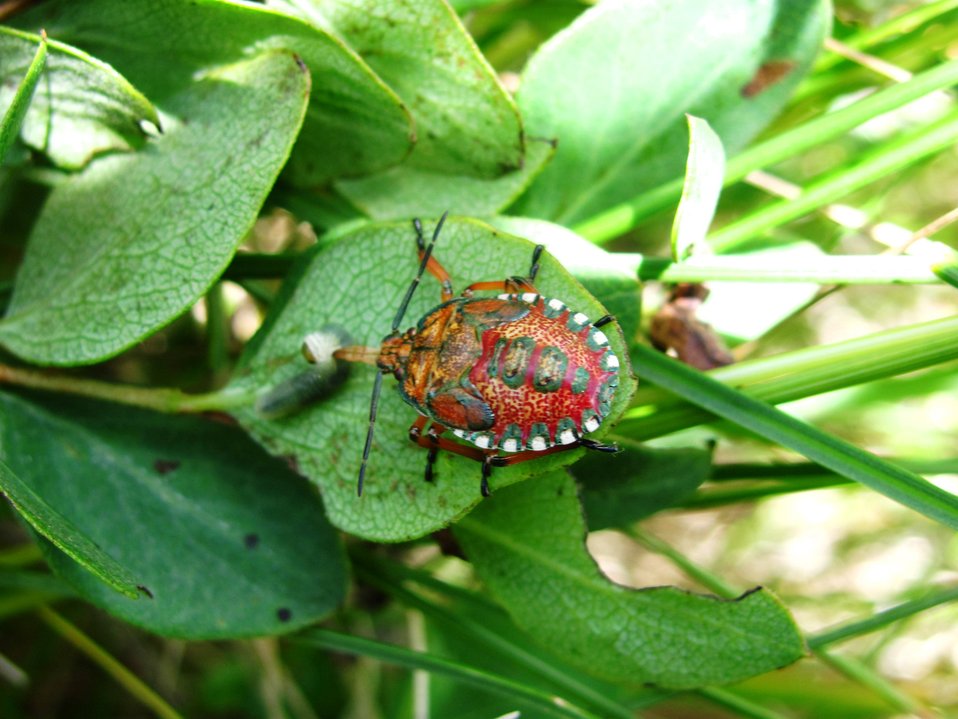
Stink Bug Nymph

This colorful stink bug nymph was found under a leaf with a caterpillar in its beak. Even though it has stunning orange and red colors when it is young, it will turn plain brown when it is an adult.

Location: Chase Lake NWR/WMD/PP Headquarters, Woodworth, ND (2012)

Credit: Char Binstock / USFWS

Photo Contest Entry #96